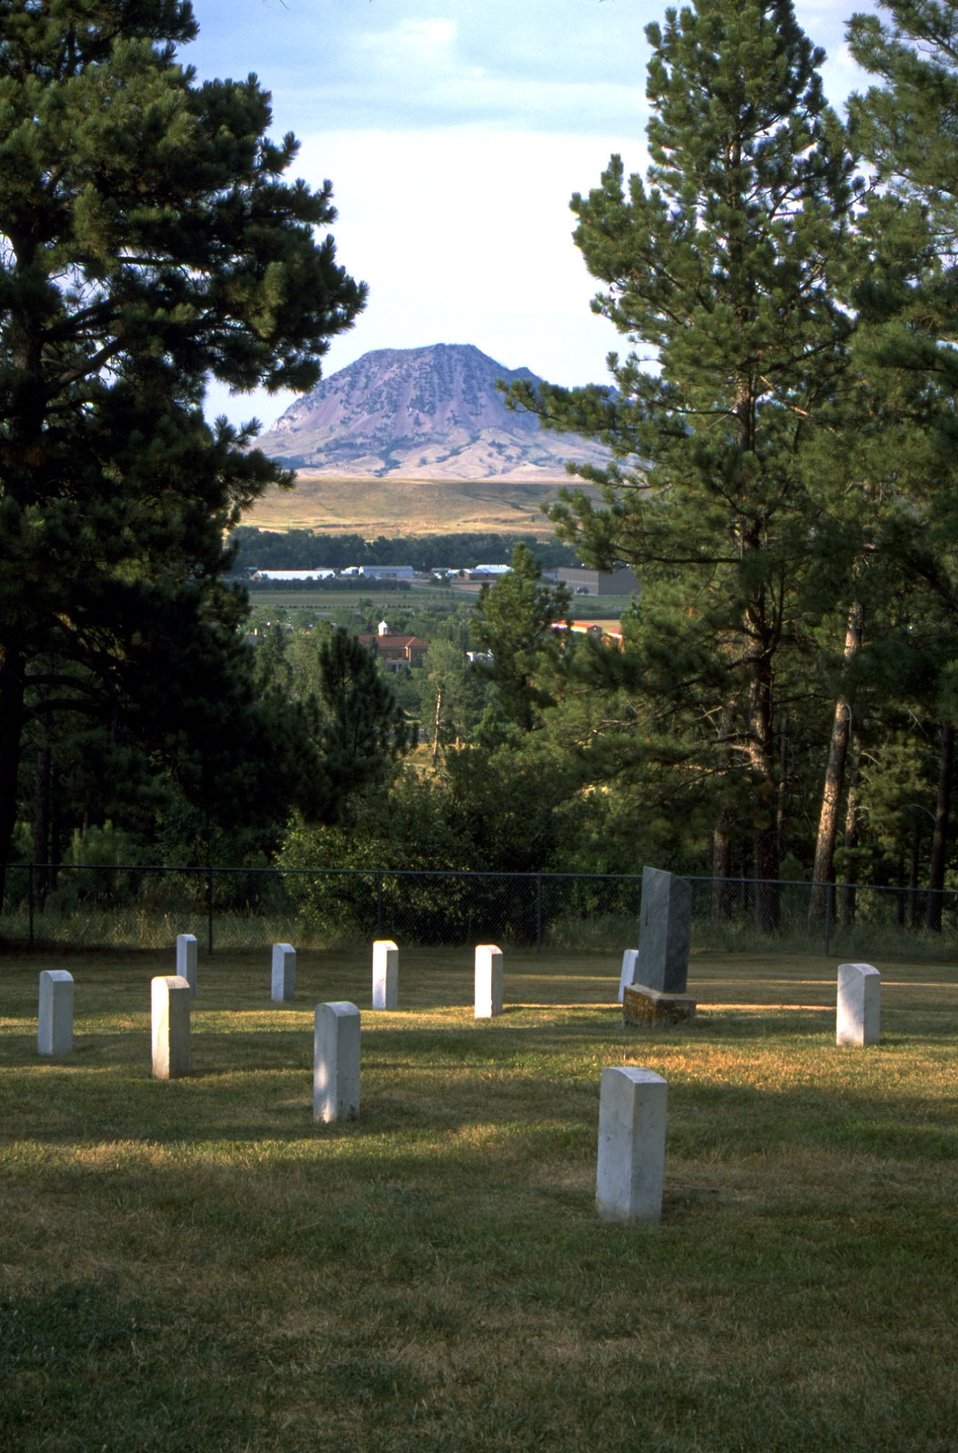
Old Post Cemetery with Bear Butte in the background